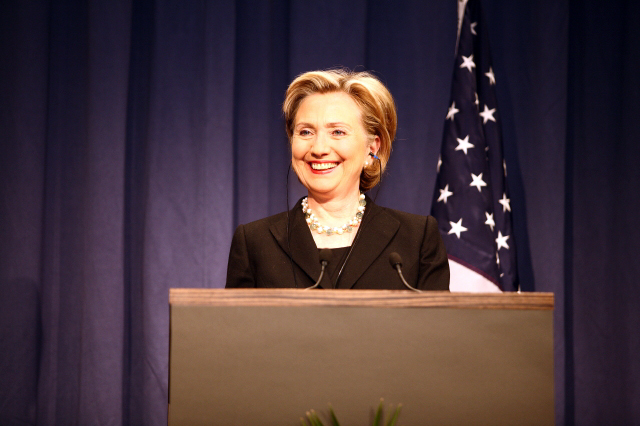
Press Conference With Russian Foreign Minister

Press conference after dinner meeting between U.S. Secretary of State Hillary Rodham Clinton and Russian Foreign Minister Sergey Lavrov in Geneva, Switzerland March 6, 2009.